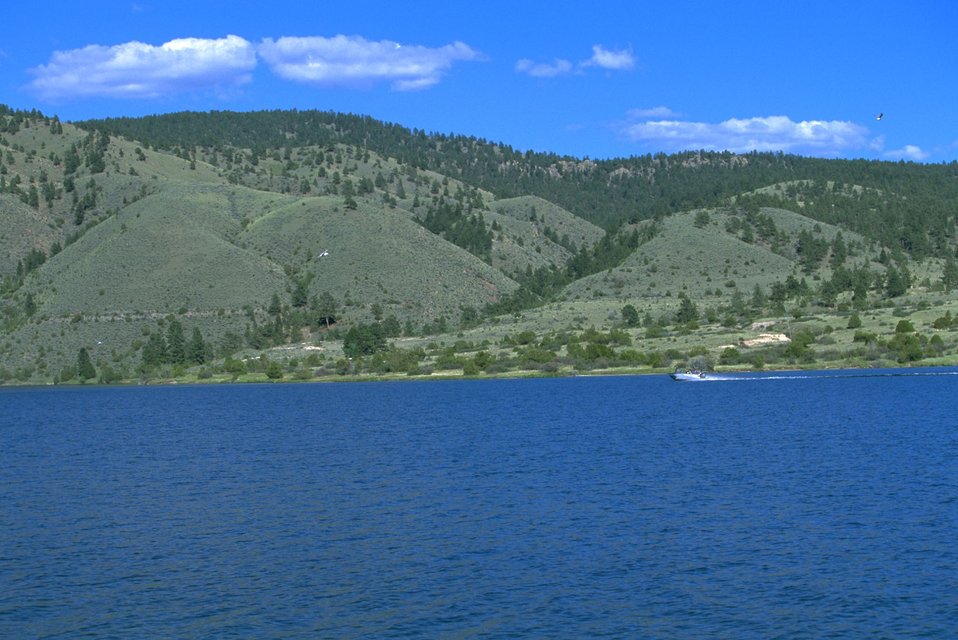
Green hills surrounding Hauser Lake